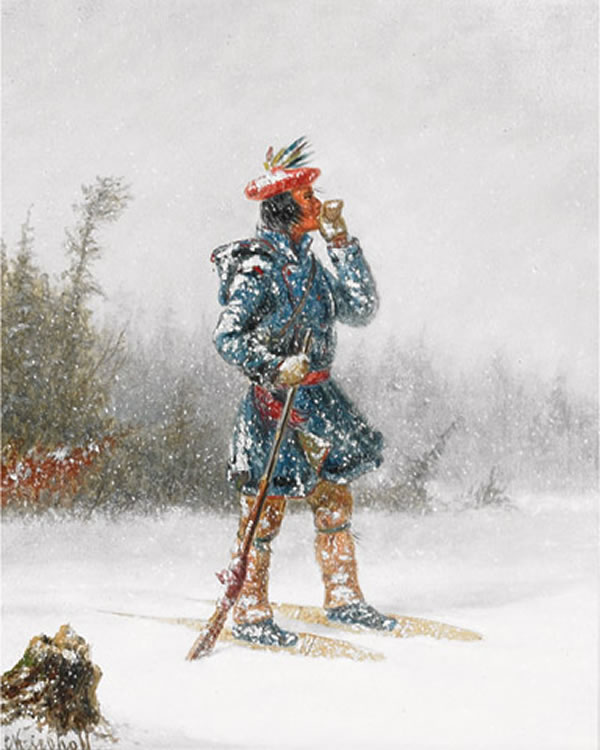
Indian Hunter on Snowshoes, oil paintings by Cornelius Krieghoff, 11 x 9 in.